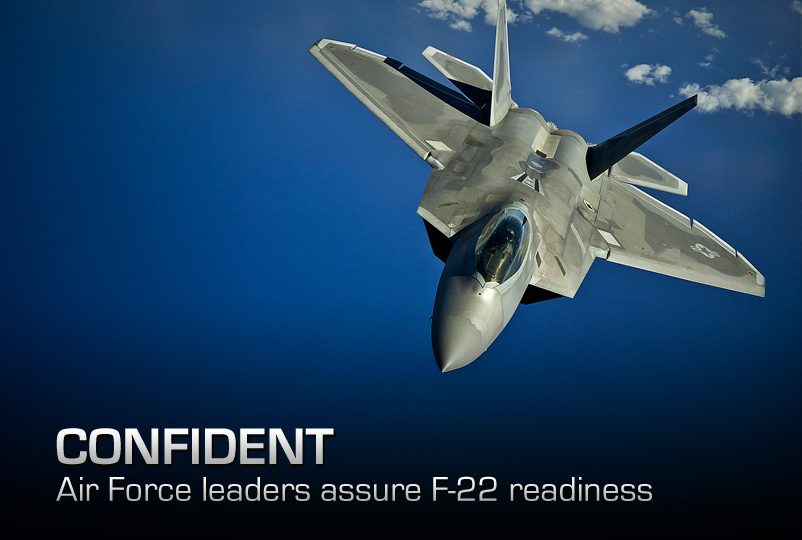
Confident